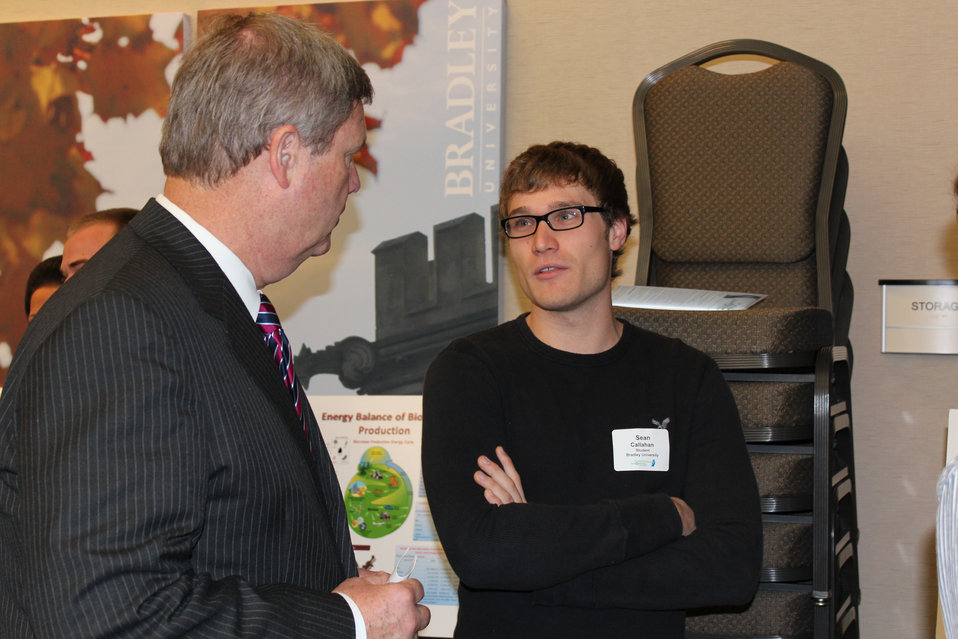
Agriculture Secretary Tom Vilsack (left) visits with Bradley University engineering student, Sean Callahan, about his class project, at the Future of Midwest Agriculture and Environmental Sustainability symposium on Thursday, Nov. 3, 2011, at Bradley University in Peoria, IL.